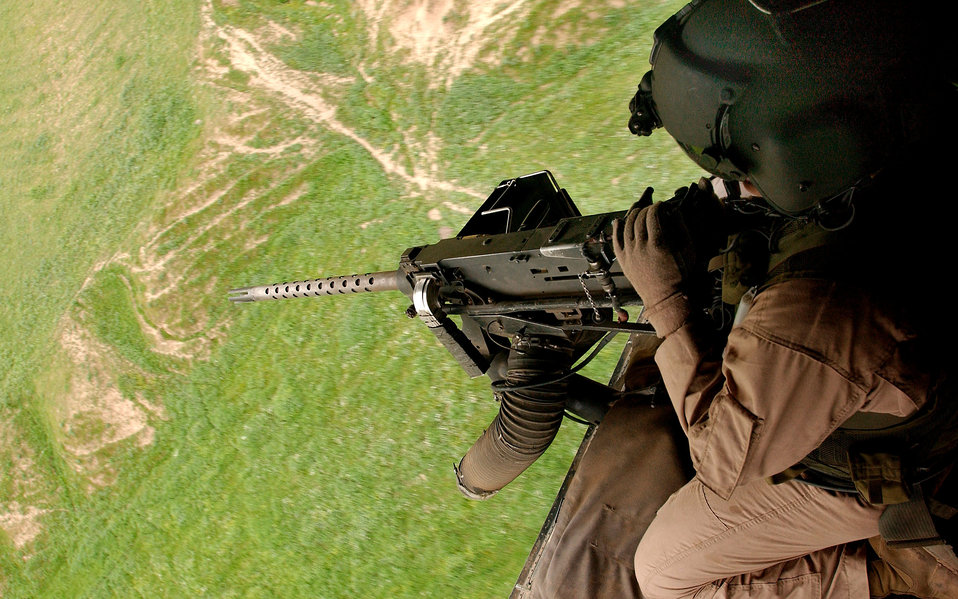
A good view

OPERATION IRAQI FREEDOM -- Airman 1st Class Brandon Midthun, aerial gunner on a MH-53M Pavelow IV helicopter from the 21st Special Operations Squadron, Royal Air Force Mildenhall, United Kingdom, mans his .50 caliber tailgun during a combat mission in support of Operation Iraqi Freedom.